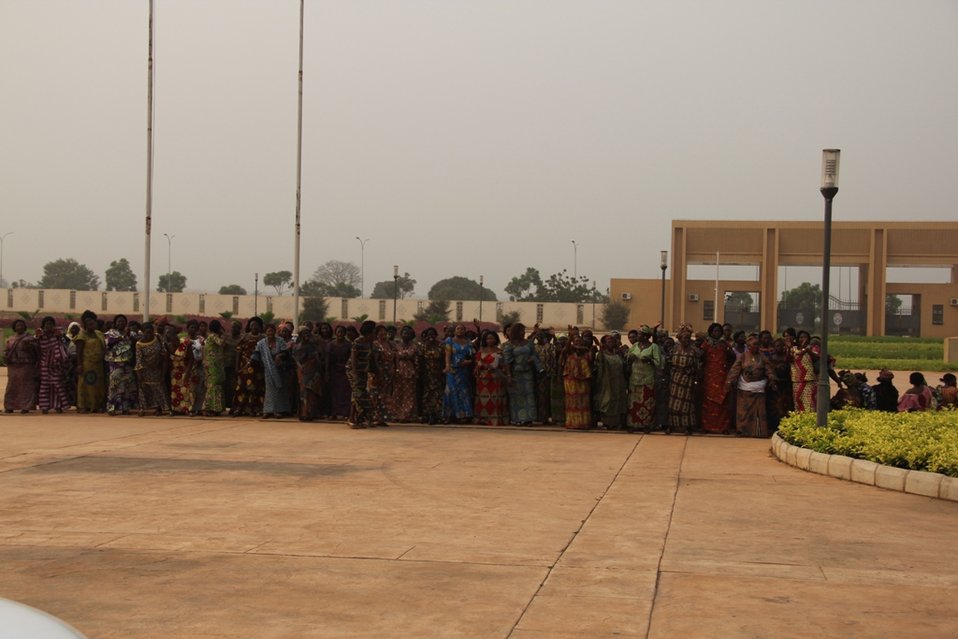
Secretary Clinton Watches the Dancers Perform

U.S. Secretary of State Hillary Rodham Clinton watches the dancers perform outside of the Presidential Palace in Lome, Togo, on January 17, 2012.